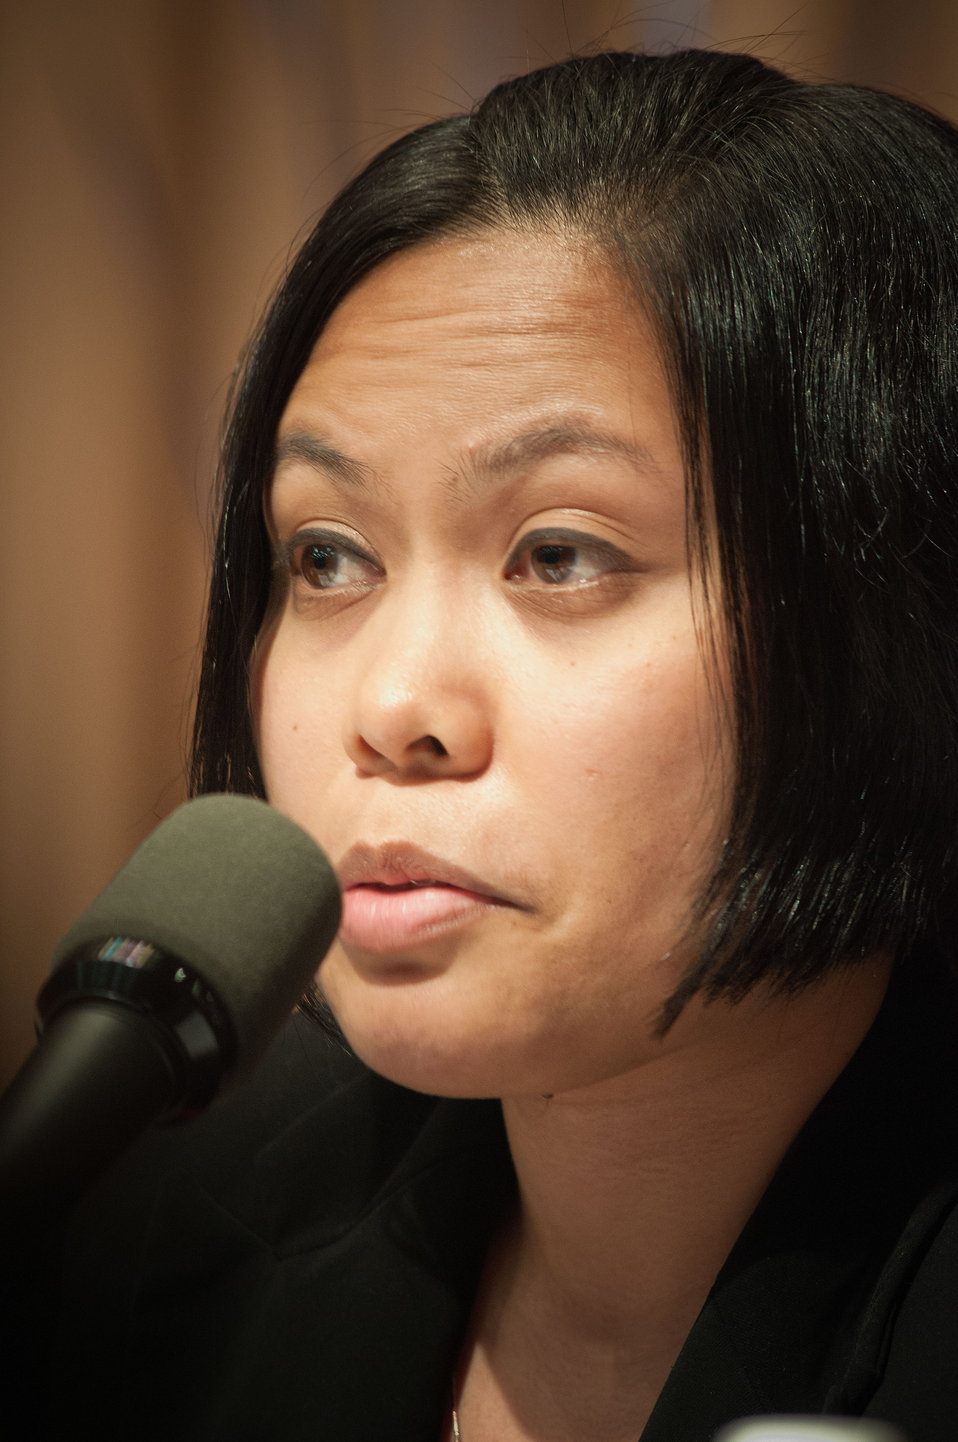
Emmabelle Kenyon, Natural Resources and Conservation Service (NRCS) intern and panel member listens to questions from the audience at the United States Department of Agriculture (USDA) Intern Day and Panel Discussion, Transforming USDA’S Tomorrow Today” in Washington, D.C., on Wednesday, July 11, 2012.